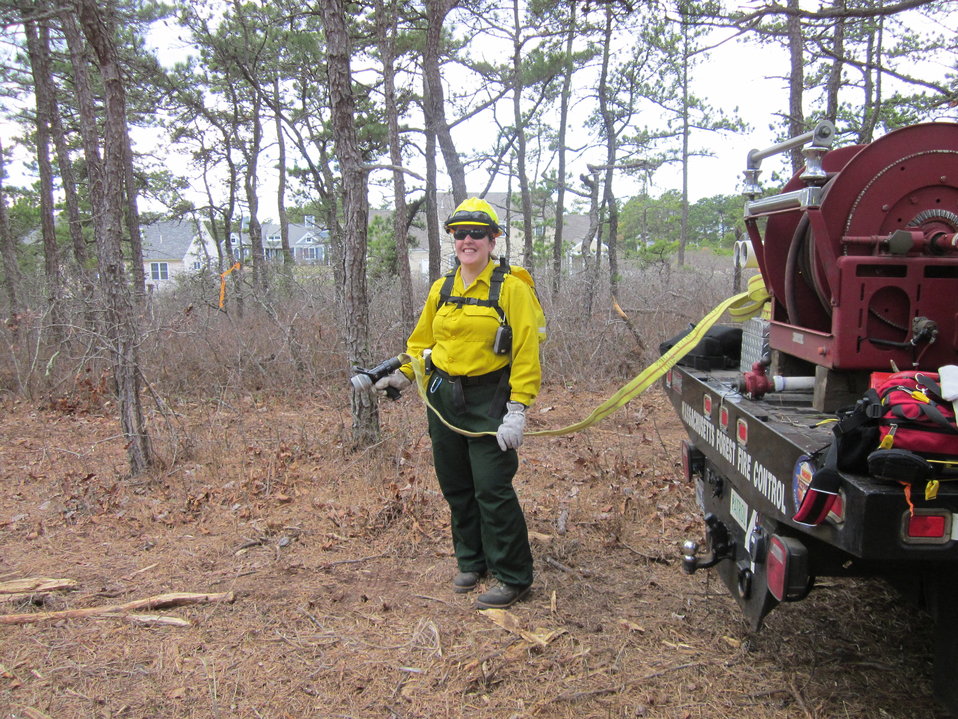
Protecting Homes Proactively

Mashpee, Massachusetts, April 5, 2012. Kate Iaquinto, a wildlife biologist for Monomoy National Wildlife Refuge works at a controlled burn at the Town of Mashpee Holland Hill Barrens area of Mashpee National Wildlife Refuge. Iaquinto helped keep the controlled burn contained by keeping its west flank watered. The burn reduced fire risk to neighboring homes and improved habitat for the New England cottontail. It was conducted by the Town of Mashpee, U.S. Fish and Wildlife Service, State of Massachusetts Department of Conservation and Recreation, and Northeast Forest and Fire Management.